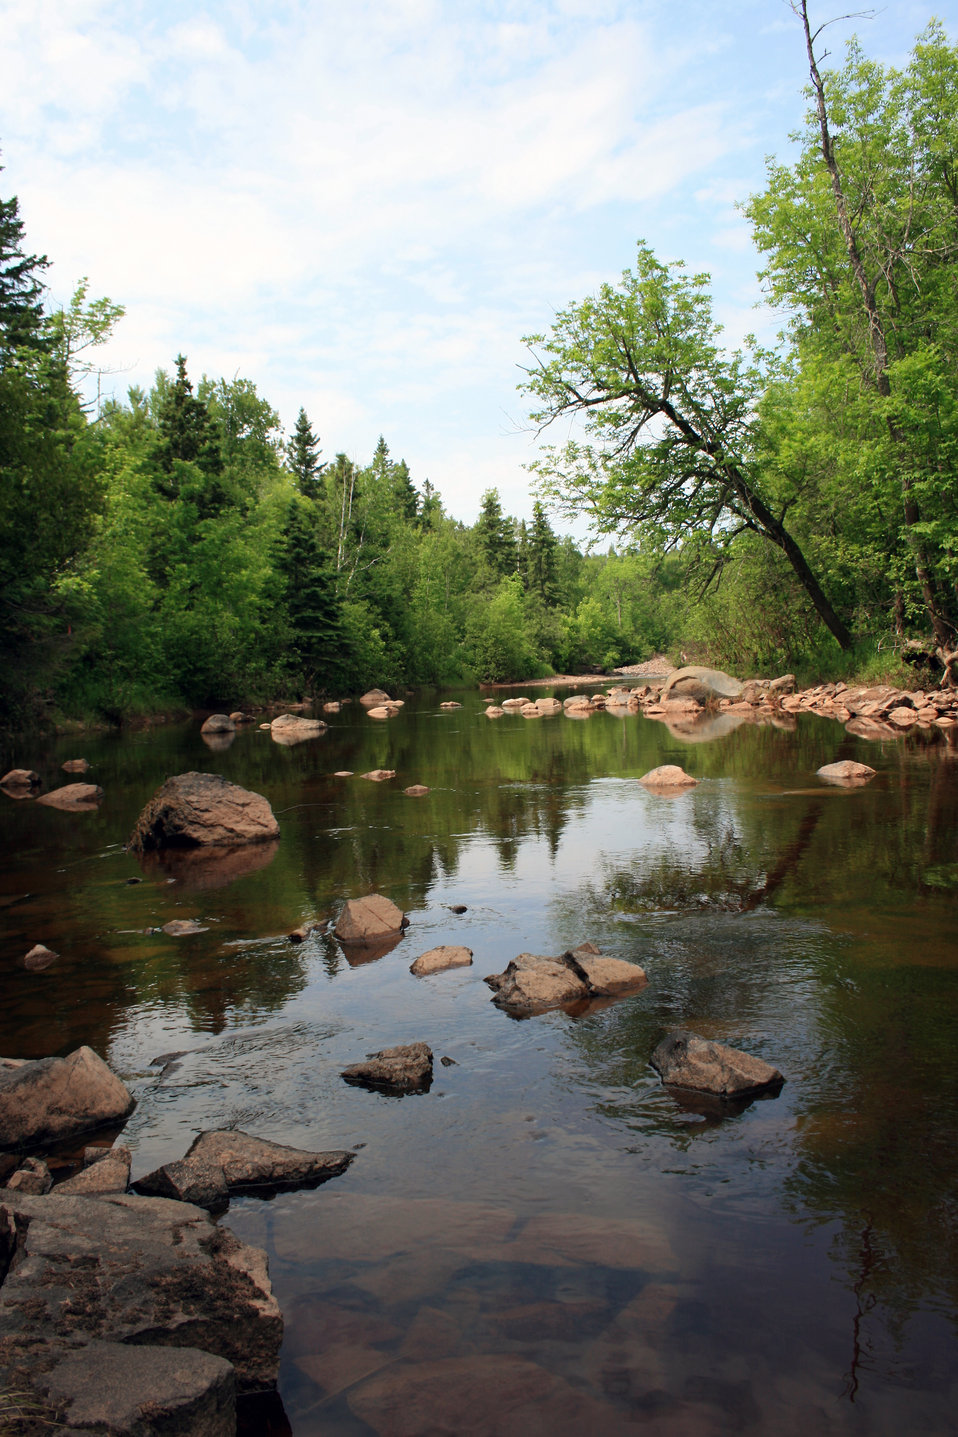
Calm River